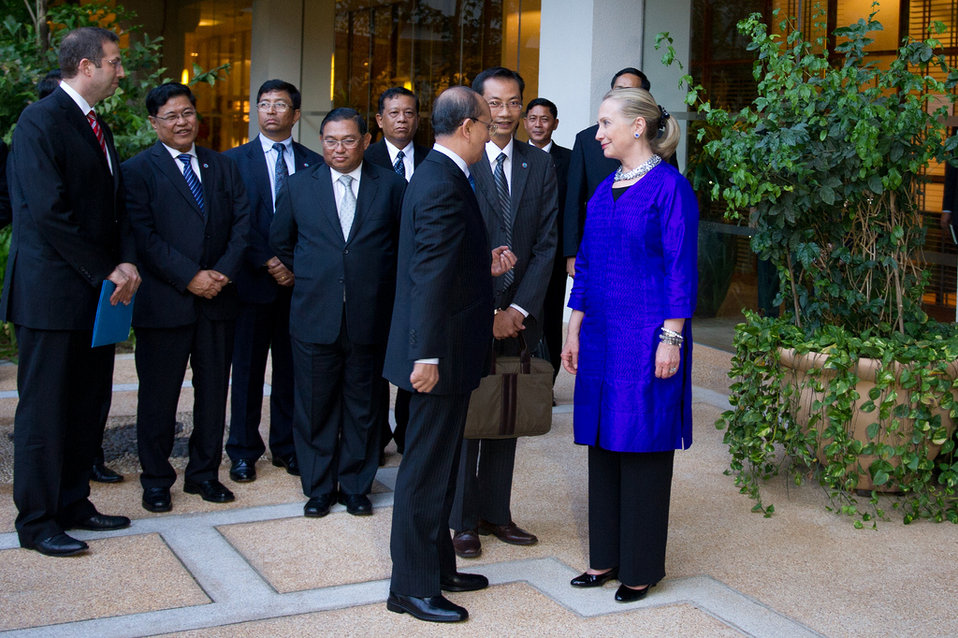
Secretary Clinton Meets with Burmese President Thein Sein

U.S. Secretary of State Hillary Rodham Clinton meets with Burmese President Thein Sein in Siem Reap, Cambodia, on July 13, 2012.